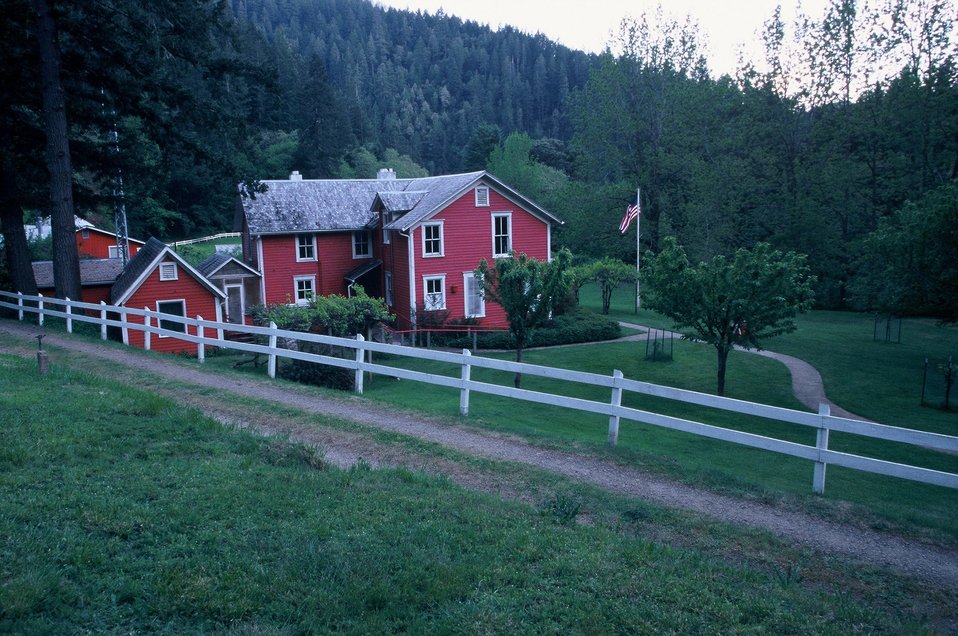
Wild section of the Rogue River from Grave Creek to Foster Bar May 19 to May 22.